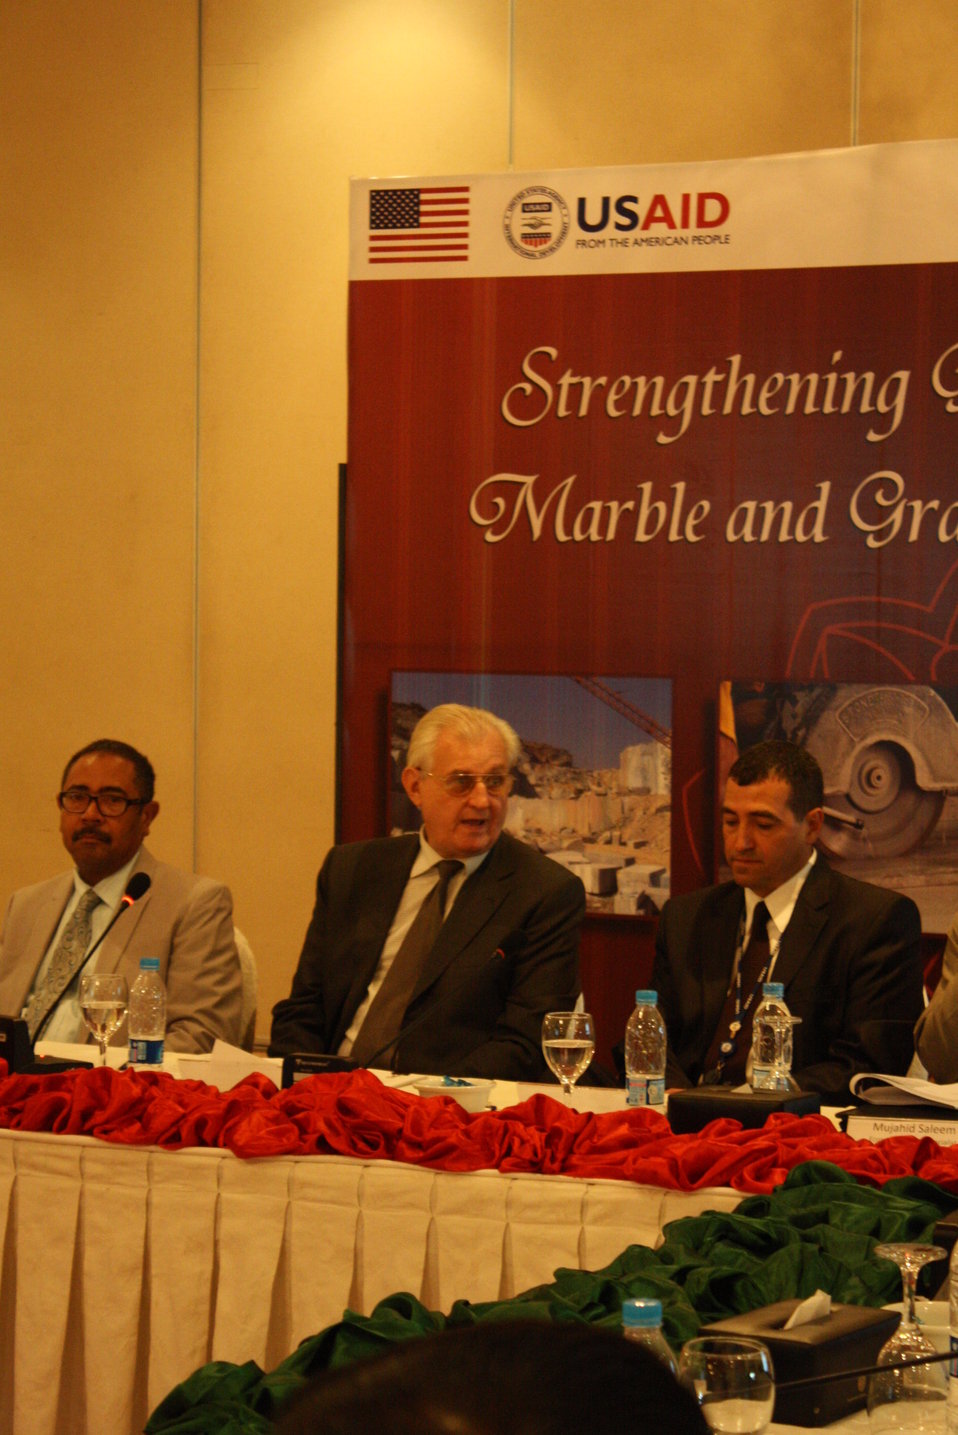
First Consultative Meeting with Marble and Granite Sector Stakeholders 4